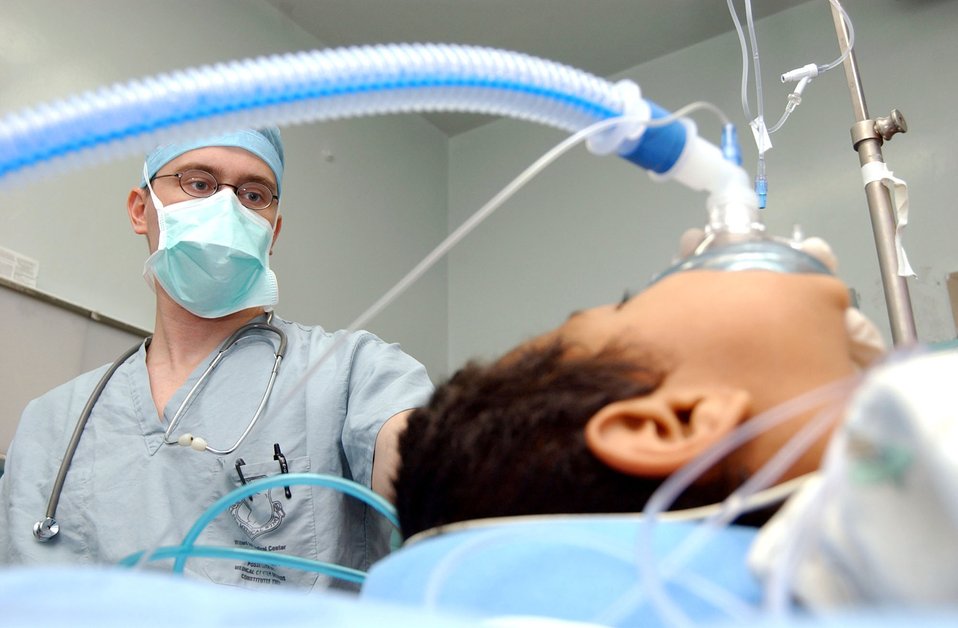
A surgeon with boy patient

Americans, Hondurans team to fix broken bones. - Maj. (Dr.) Christopher James works to bring a 6-year-old Honduran boy out from under anesthesia after a successful surgery Aug. 15 at the Hospital Esquela in Tegucigalpa, Honduras. The procedure was accomplished as part of a pediatric orthopedic medical readiness training exercise. The boy was hit by a taxi cab causing an open fracture to his tibia. A medical team of eight people from Wilford Hall Medical Center at San Antonio and Joint Task Force-Bravo at Soto Cano Air Base, Honduras, treated more than 200 people and operated on more than 60 individuals during its two-week training exercise Aug. 5 to 19. Major James is an anesthesiologist at Wilford Hall Medical Center.